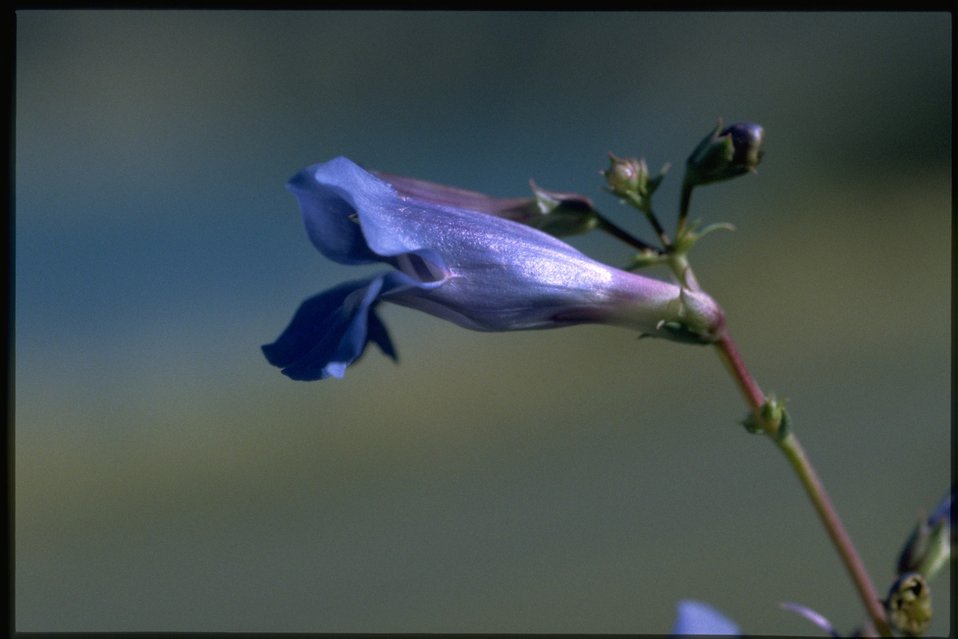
Closeup shot of Penstemon.